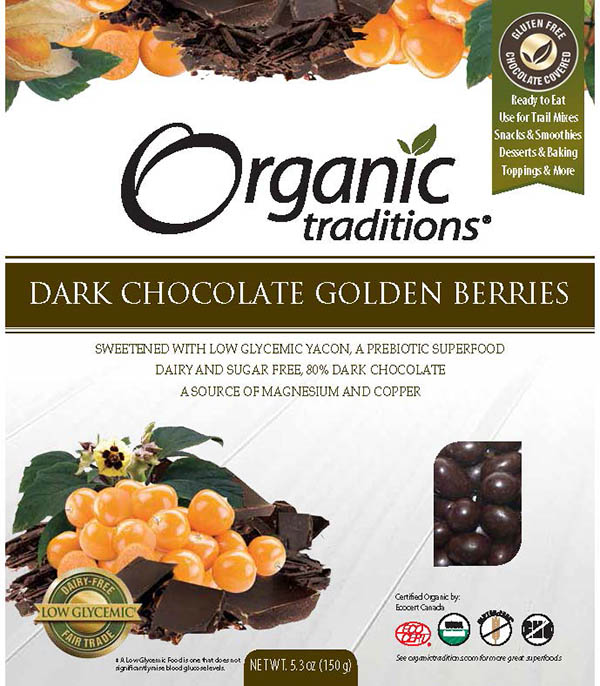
RECALLED – Candy

April 14, 2014 – Product Recall – Health Matters America Inc. Issues Allergy Alert on Undeclared Milk in Organic Traditions Brand Dark Chocolate Golden Berries and Dark Chocolate Sacha Inchi Seeds.